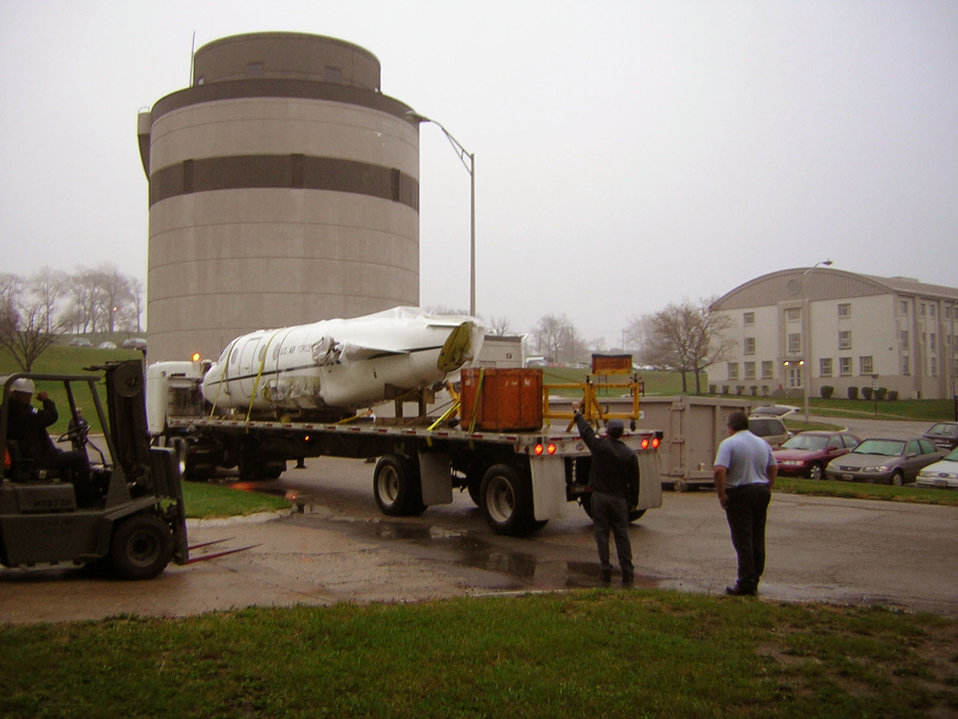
Technicians use aircraft wreckage for testing

WRIGHT-PATTERSON AIR FORCE BASE, Ohio -- With Wright-Patterson's vertical wind tunnel in the background, training aircraft systems group technicians guide the fuselage of a wrecked T-1A Jayhawk into a building here. The aircraft is used as a trainer for cargo and tanker aircrews flying aircraft such as the C-17 Globemaster III and KC-135 Stratotanker. Although not in the air, this T-1A will continue to serve the Air Force. The group's aging and reliability program specialists will use the fuselage and the wings for testing.